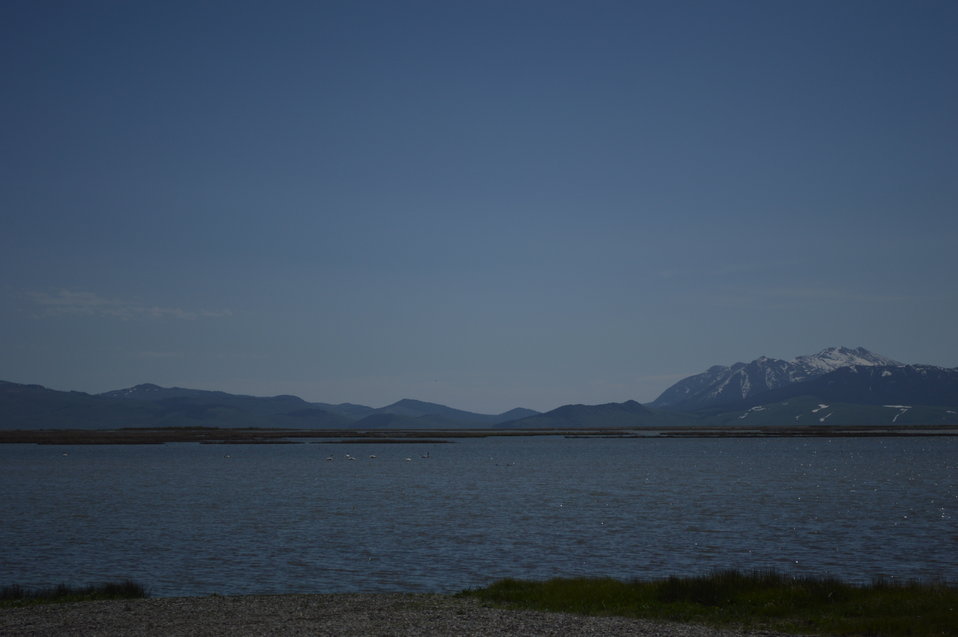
Regional Leadership Visit to Montana 2014